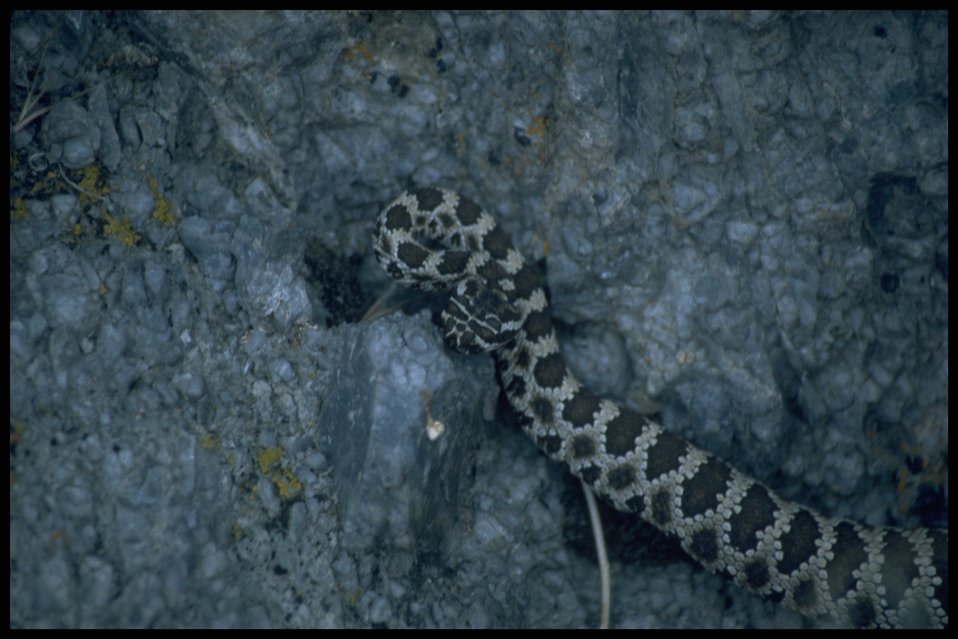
Close shot of Rattle Snake, Lakeview District.